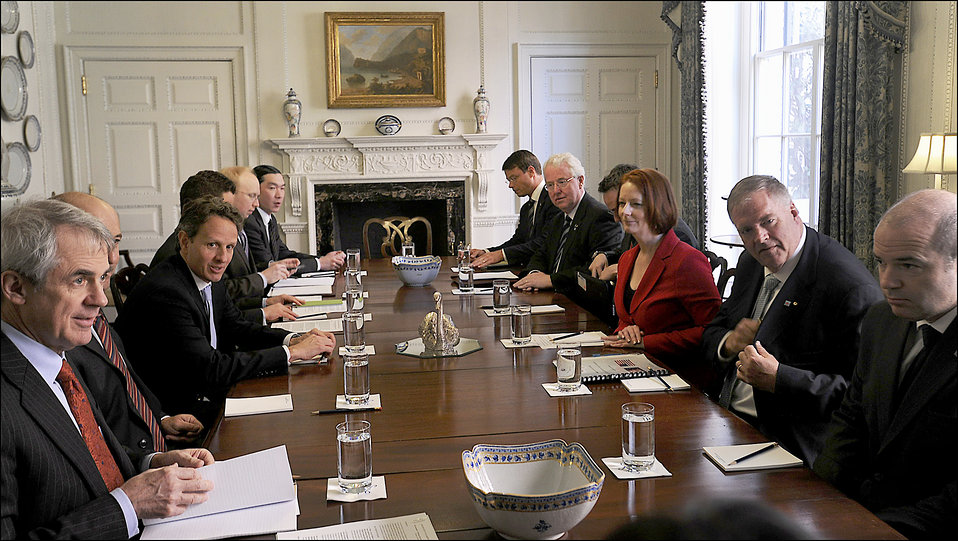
Australian Prime Minister Julia Gillard

On March 7, 2011, Secretary Geithner met with Australian Prime Minister Julia Gillard at Blair House in Washington, D.C.